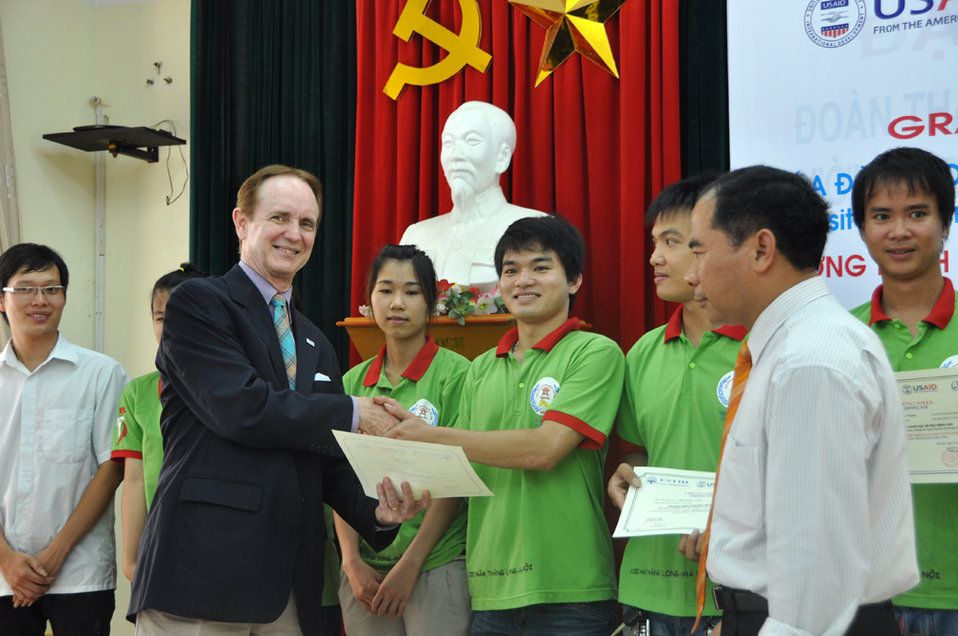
USAID Mission Director Francis Donovan participate in graduation of IT students in Hanoi on June 22, 2011.